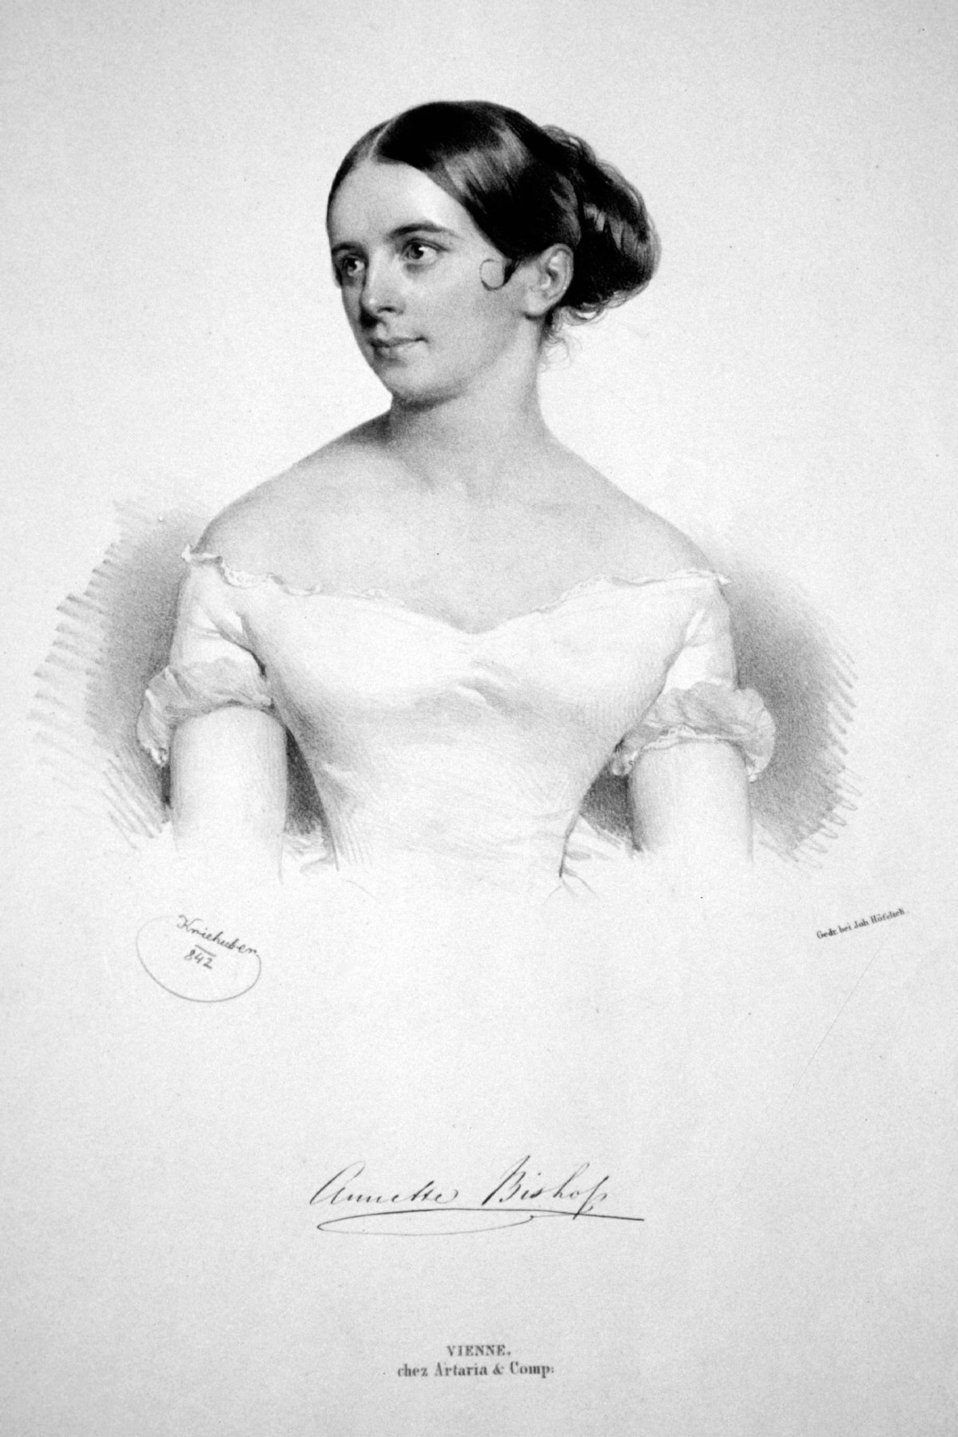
Annette Bishop Litho